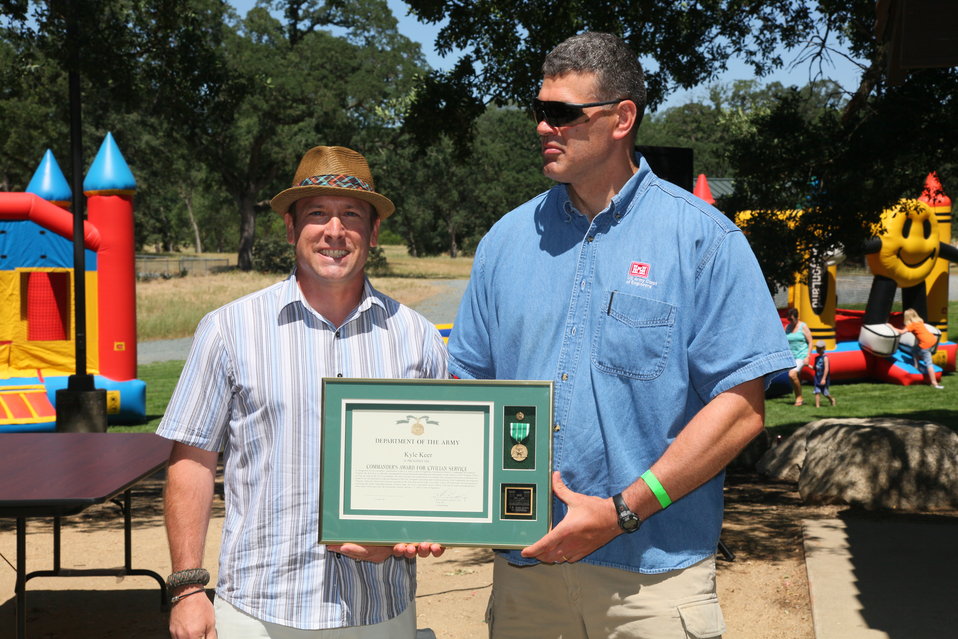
2011 Annual Picnic